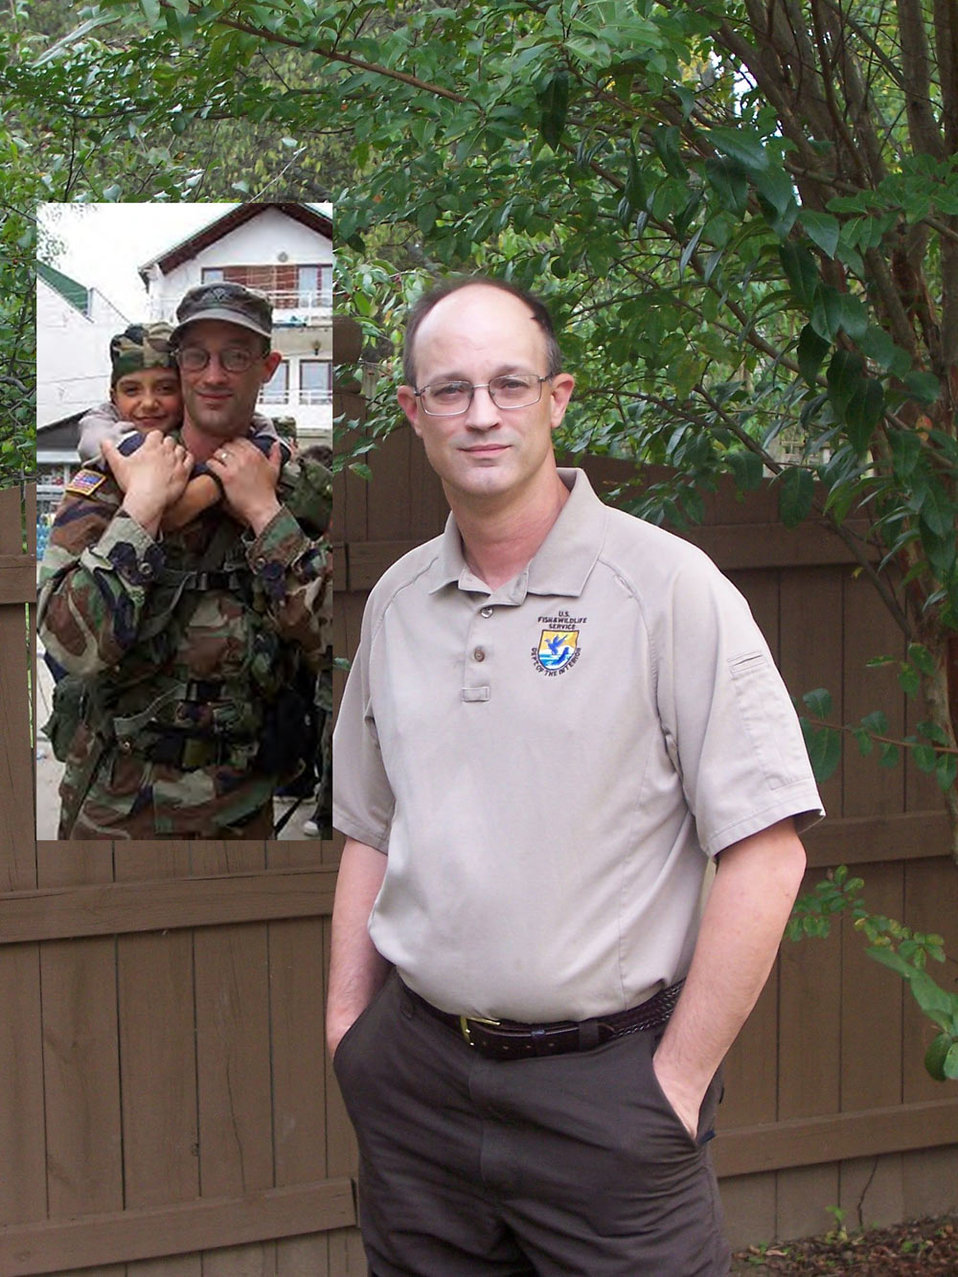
Ken McDonald-Southeast Region

Ken McDonald began his military service with the United States Marine Corps in June, 1992. During his military career, he has also served in the Tennessee Army National Guard, the Ohio Army National Guard, the United States Coast Guard Reserve and the Tennessee Air National Guard. Trained initially as an infantryman, he has also served as a combat engineer, human intelligence collector (Arabic), marine science technician and air transportation specialist. He currently serves in the Tennessee Army National Guard’s 1st Battalion, 181st Field Artillery as a HIMARS crewman. HIMARS means High Mobility Artillery Rocket System is a U.S. light multiple rocket launcher mounted on a standard Army Medium Tactical Vehicle. Over the course of his career he has served in the United States after 9-11 during Operation Noble Eagle, and on numerous deployments to countries such as Spain, Italy, France, Germany, Turkey, Egypt, Somalia, Cuba, Japan and Kosovo. He started working as a Fish and Wildlife Biologist for the U.S. Fish and Wildlife Service in February 2012 at the Tennessee Ecological Services Office in Cookeville, Tennessee.